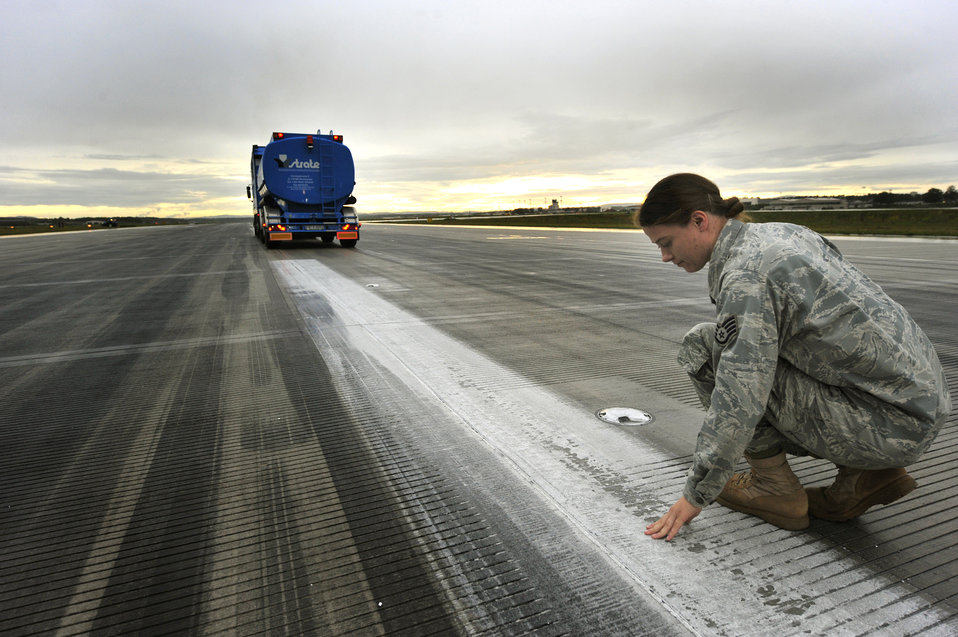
Burnt rubber

Staff Sgt. Stephanie Heck checks the amount of rubber and paint removed from the runway after a truck equipped with a high-powered pressure washer makes its first pass, July 19, 2011, at Ramstein Air Base, Germany. Sergeant Heck is the NCO in charge of the airfield management operations section.